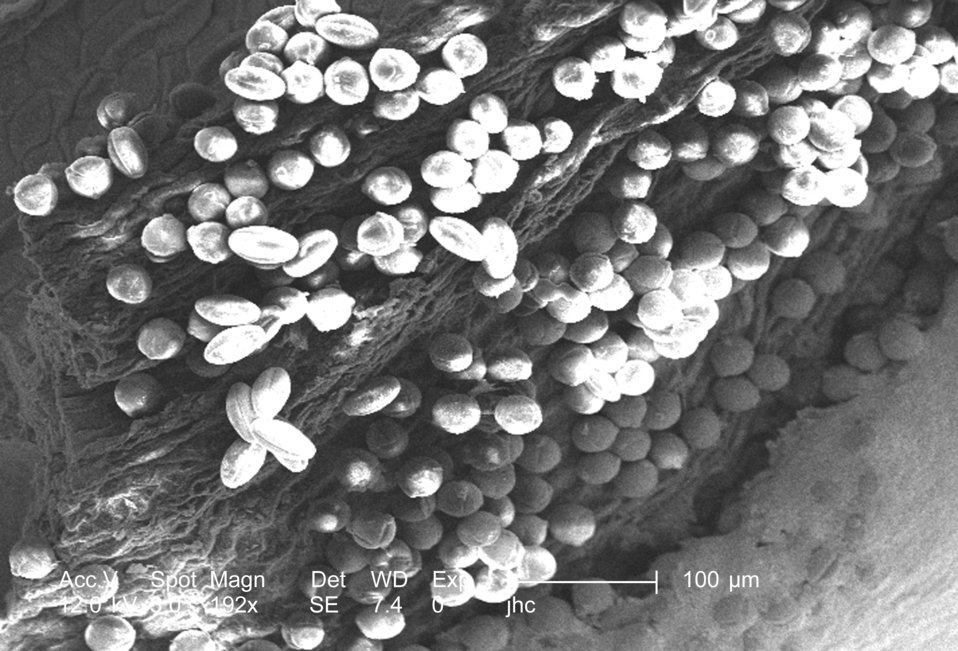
Magnified 192x, this scanning electron micrograph (SEM) revealed some of the morphologic ultrastructure found amongst a collection of pollen found within the dehisced, or split open, anther of a yellow "Fireworks" sundrops, Oenothera fruticosa flower. Amongst this grouping were pollen grains representing various stages of drying through which these pollen grains pass as they mature. The drying of the grains changes their shape making them more elliptical-shaped, and less circular.